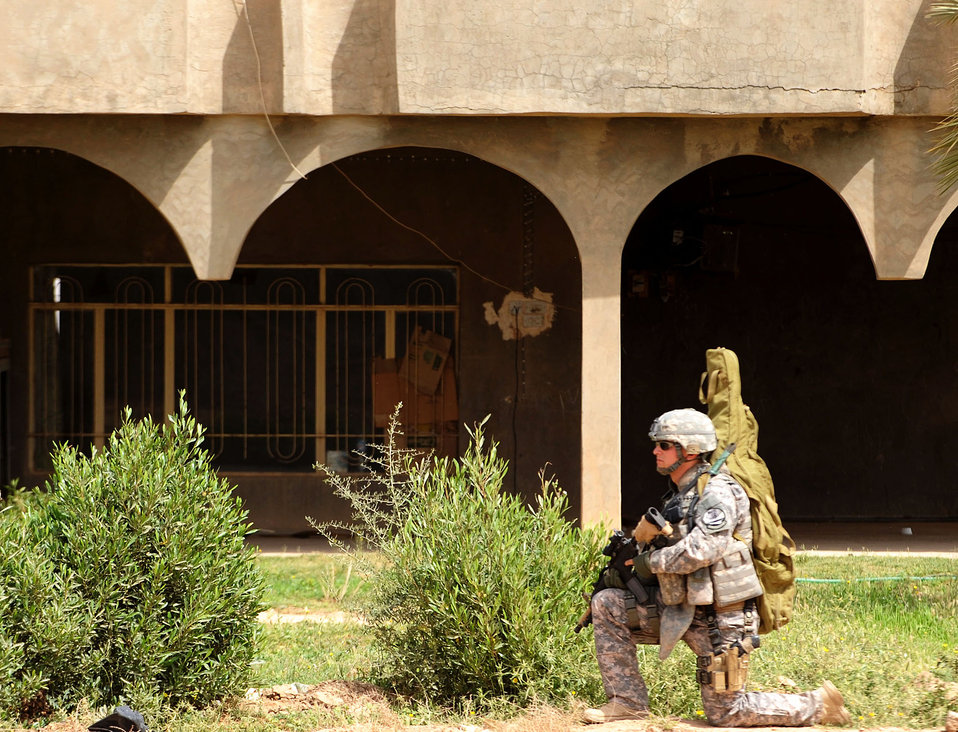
Joint Base Balad security forces Airmen patrol Iraq villages

Senior Airman Brian Hafner conducts security during a patrol in Bakr Village April 9 in support of Operation Iraqi Freedom. He is assigned to the 532nd Security Forces Squadron at Joint Base Balad, Iraq.